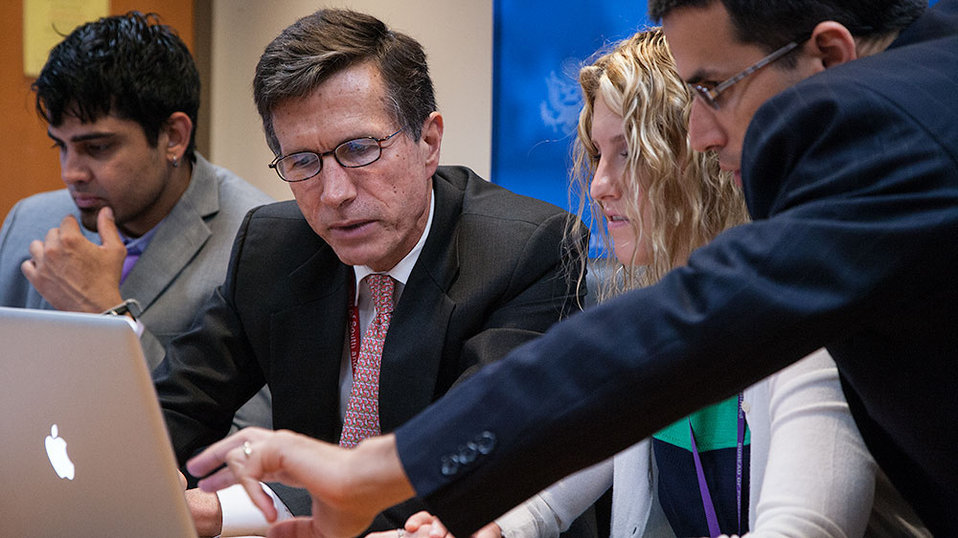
Assistant Secretary Blake Participates in a Facebook Chat

Assistant Secretary of State Robert O. Blake participates in a Facebook on U.S.-India relations on July 2, 2013.